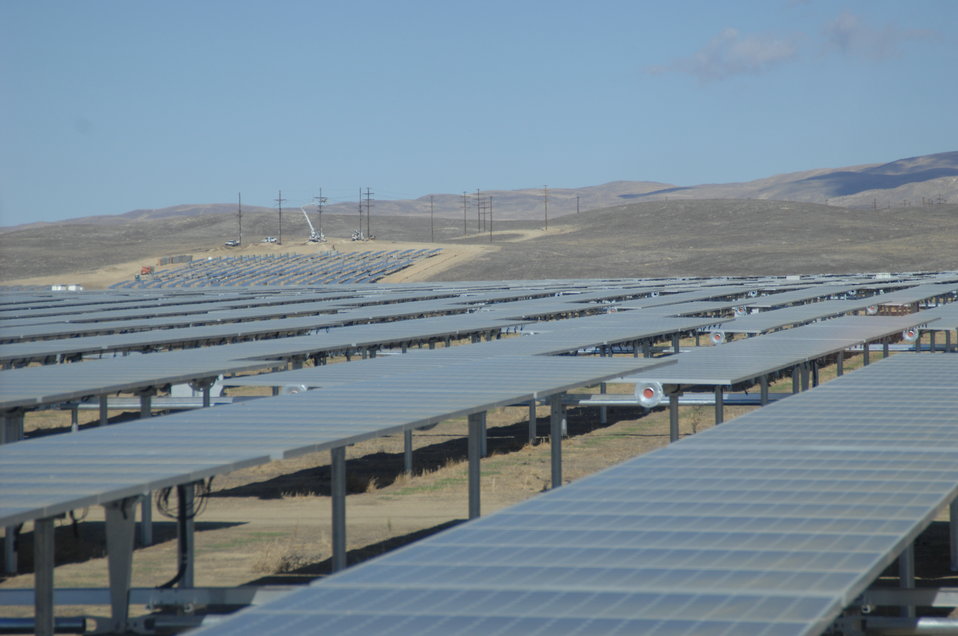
Solar Panels at California Valley Solar Ranch 2